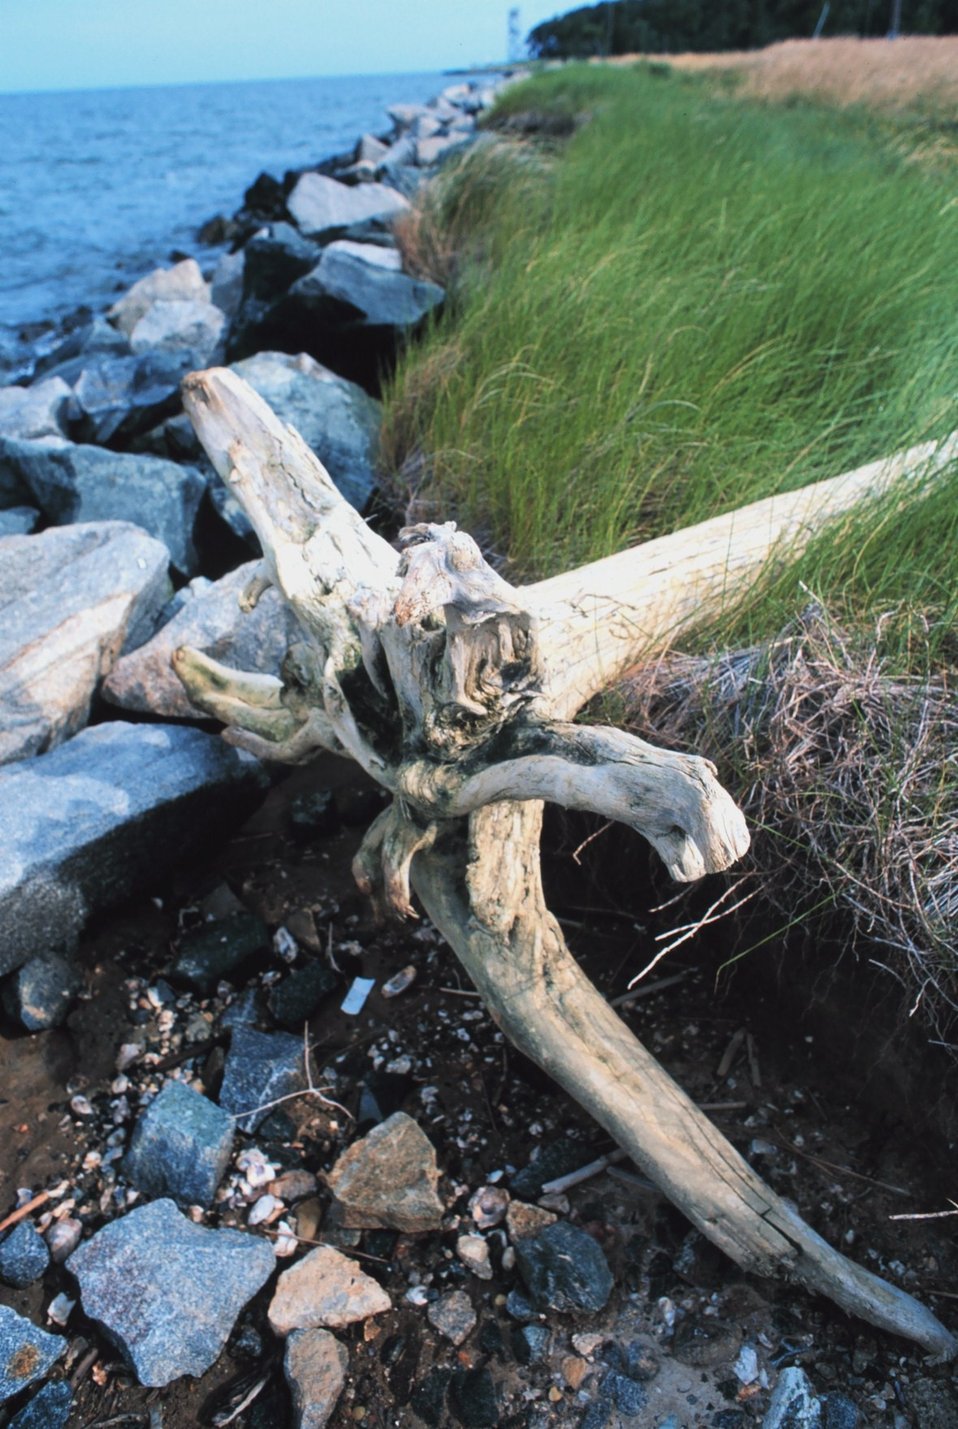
Rock seawall to mitigate erosion and driftwood at the south end of Tilghman Island.